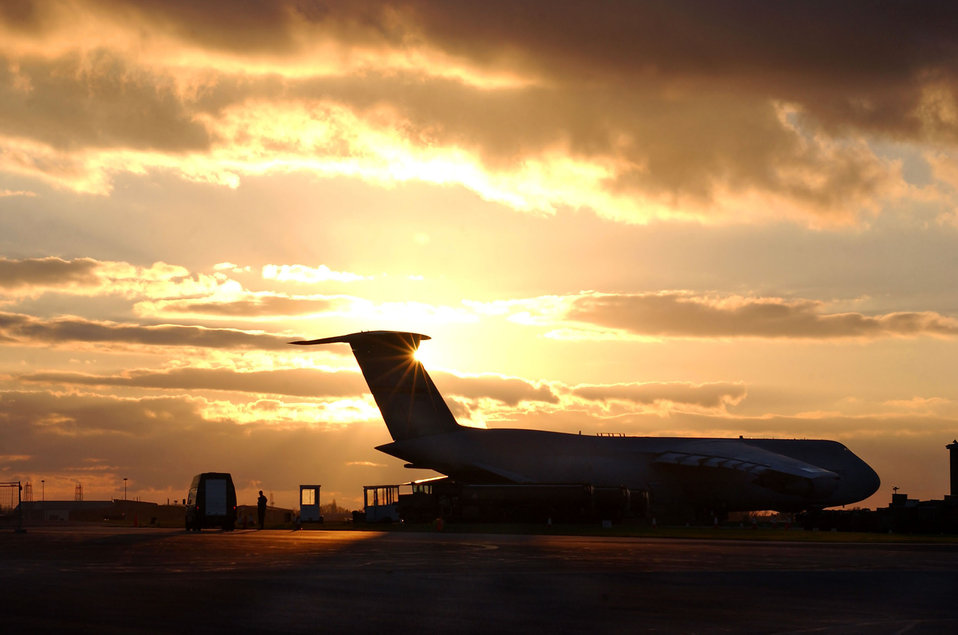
The sun sets on the Galaxy

ROYAL AIR FORCE MILDENHALL, England -- The sunset silhouettes a C-5 Galaxy from Travis Air Force Base, Calif.